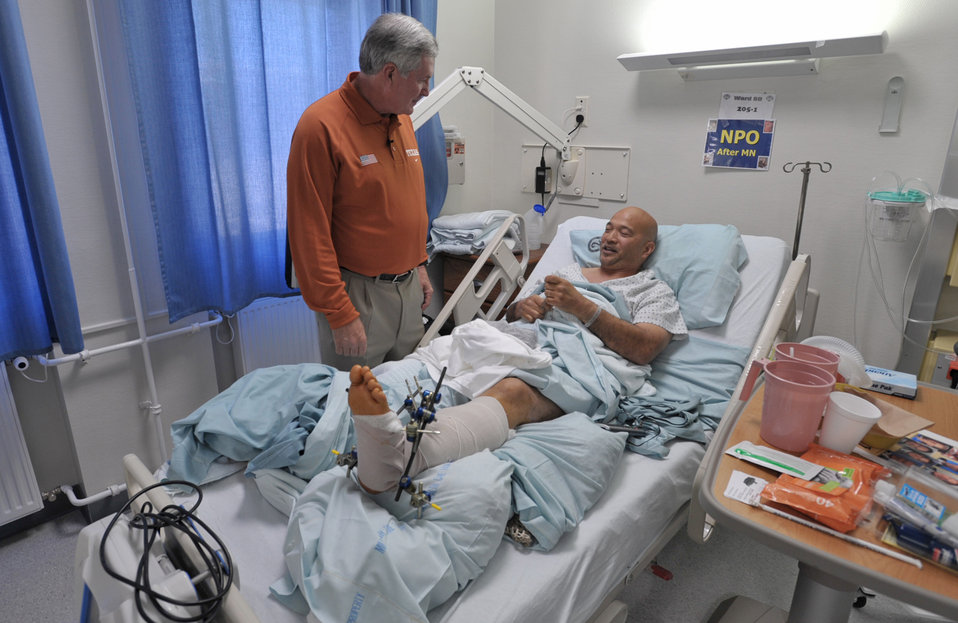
NCAA coaches visit troops in military hospital

University of Texas Coach Mack Brown visits with Henry Bautista at a U.S. military hospital May 29 in Landstuhl, Germany. The hospital was one of the first stops for Coaches Tour 2009, a morale-boosting mission that brings NCAA football coaches to U.S. servicemembers and their families. Mr. Bautista served 10 years in Army intelligence without any major injuries before he became a civilian field representative for an armored vehicle contractor. He was flown to Germany from Iraq after his leg was severely injured by a mishap with one of the vehicles.